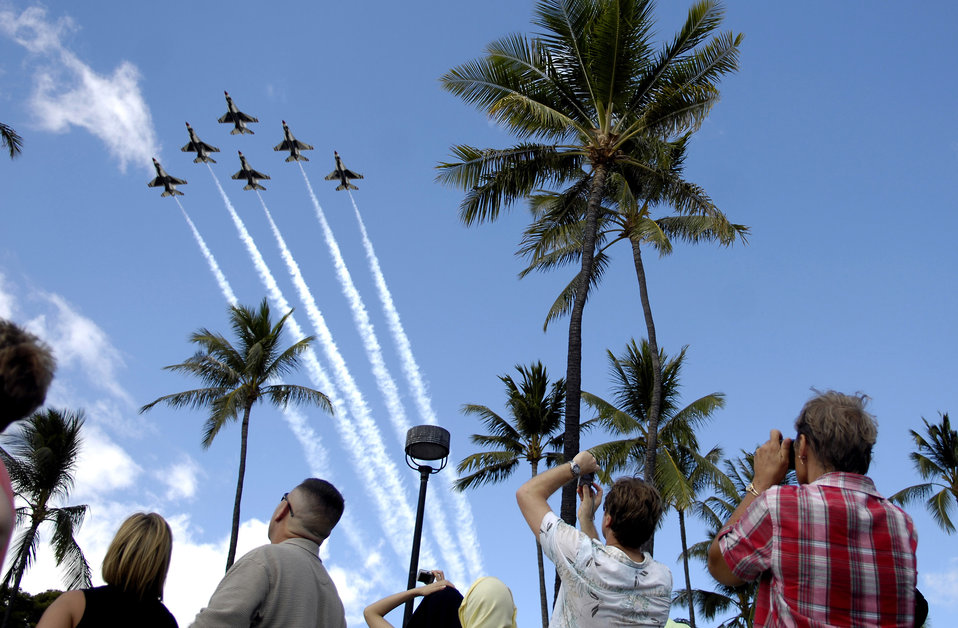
Thunderbirds fly above island paradise

Spectators watch as the Air Force Thunderbirds demonstration team begin their aerial demonstration practice Sept. 13 in Waikiki, Hawaii. The Thunderbirds performed the practice session to prepare for their show Sept. 15 as part of Air Force Week Honolulu.